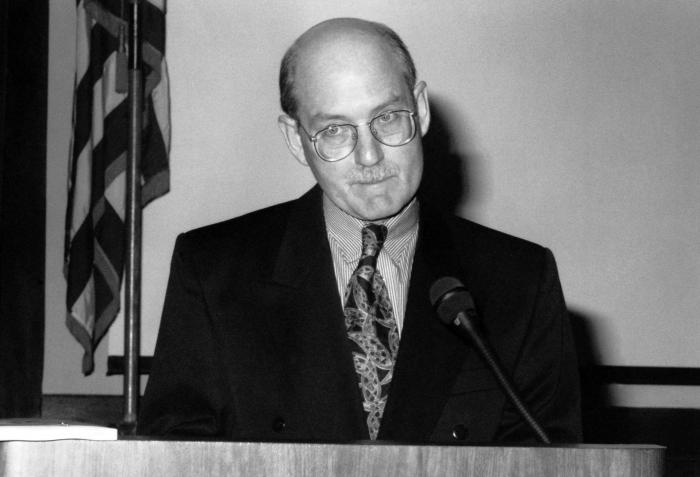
This photograph shows Centers for Disease Control Research Microbiologist, Dr. Joseph E. McDade, as he was presenting an overview of the Southwestern United States Hanta virus outbreak of 1993.